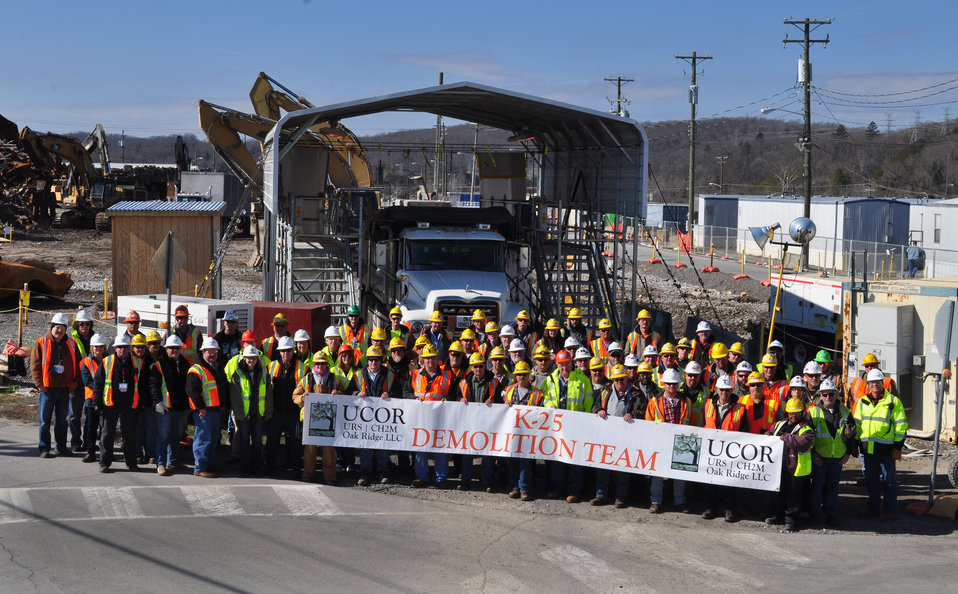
Workers ETTP K-25 North Tower Oak Ridge

DOE photo Lynn Freeny D&D workers 1-23-2013 Oak Ridge Tennessee